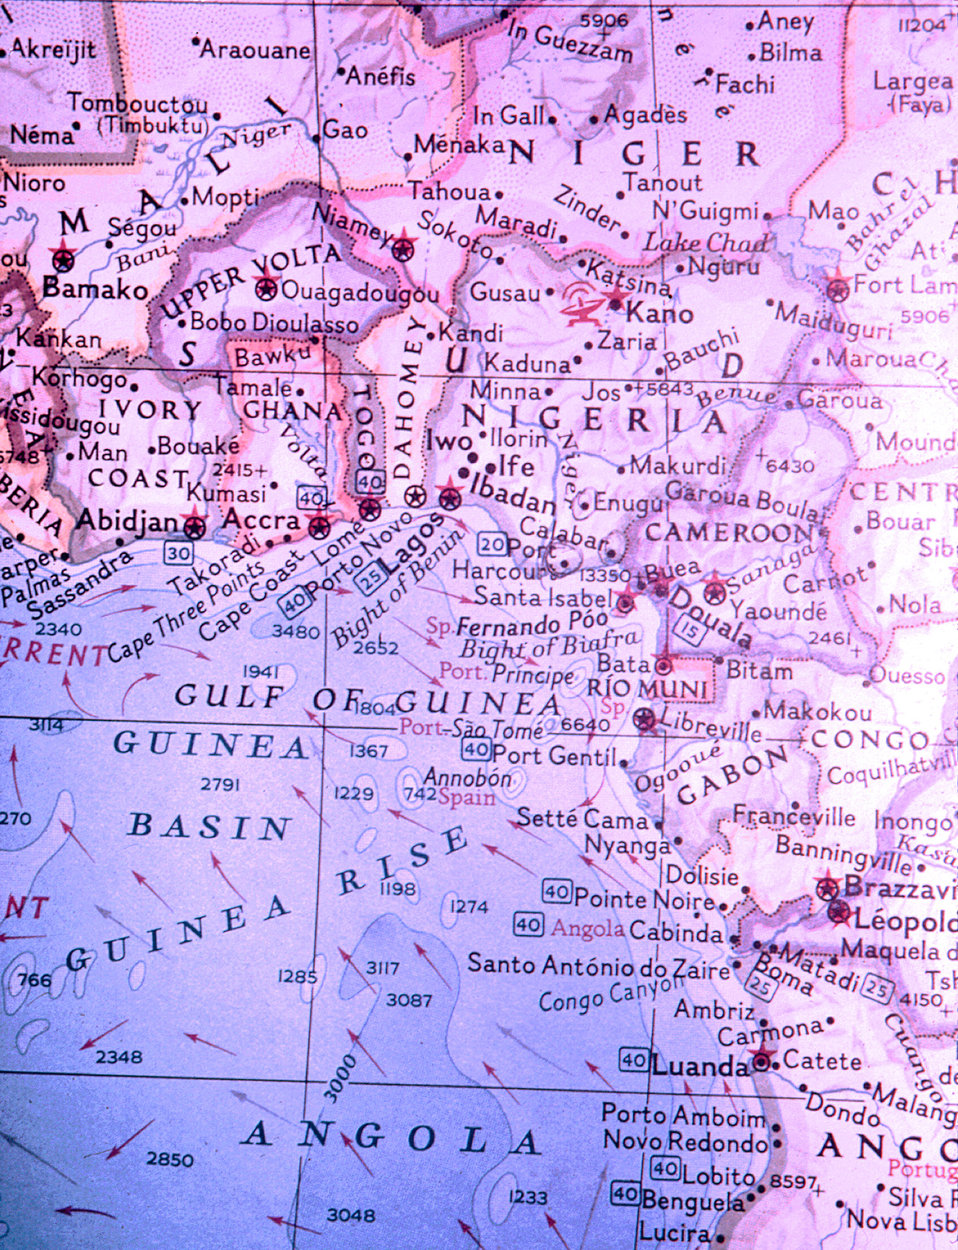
This 1967 map shows several relief camps surrounding the Nigerian-Biafran war zone where the CDC was asked to assist the International Committee of the Red Cross (ICRC) in its disease control and death prevention efforts.